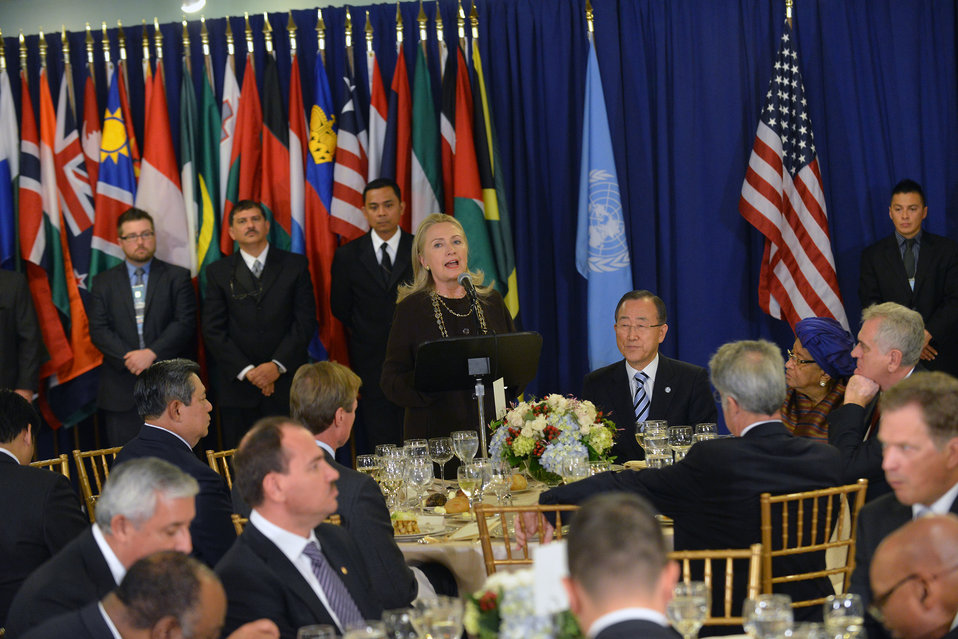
Secretary Clinton Delivers Remarks at the Head of State Luncheon at the United Nations

U.S. Secretary of State Hillary Rodham Clinton delivers remarks at the Head of State Luncheon hosted by United Nations Secretary General Ban Ki-moon at the United Nations in New York, New York on September 25, 2012.